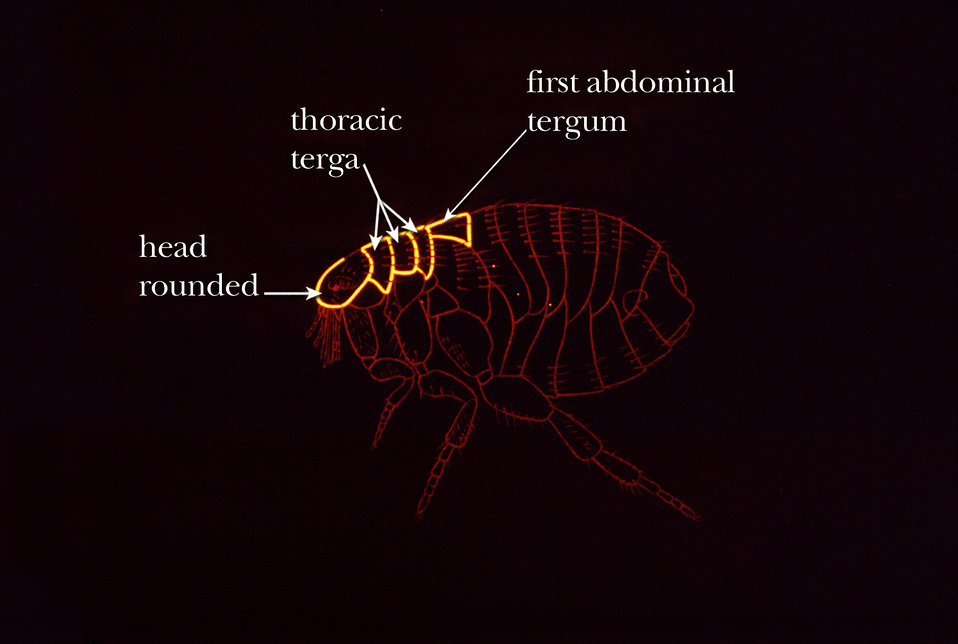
This illustration shows some of the identifying characteristics common to fleas of the Order Siphonaptera.